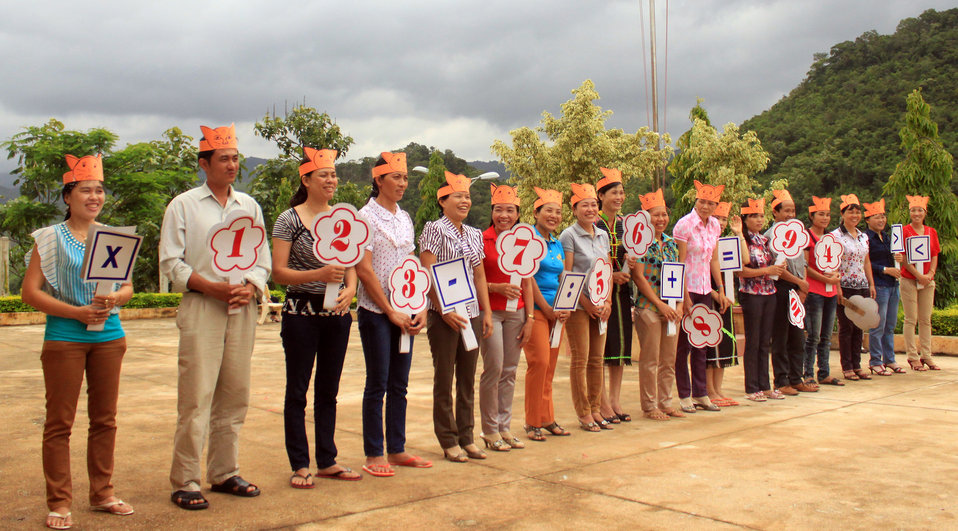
Teachers in Kon Tum practice what they learned from USAID-funded intensive training courses